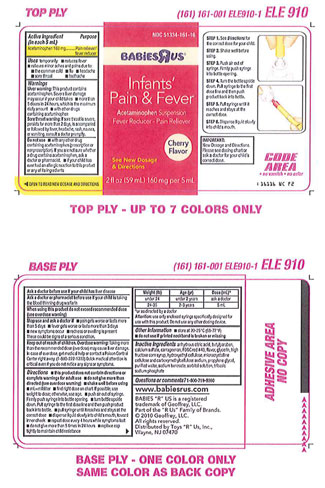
Recalled - Acetaminophen infant suspension liquid

November 1, 2013 – Product Recall – Perrigo Initiates Nationwide Voluntary Product Recall of Acetaminophen Infant Suspension Liquid, 160 Mg/5 Ml, Due to a Potential Defect with the Co-packaged Oral Syringe.